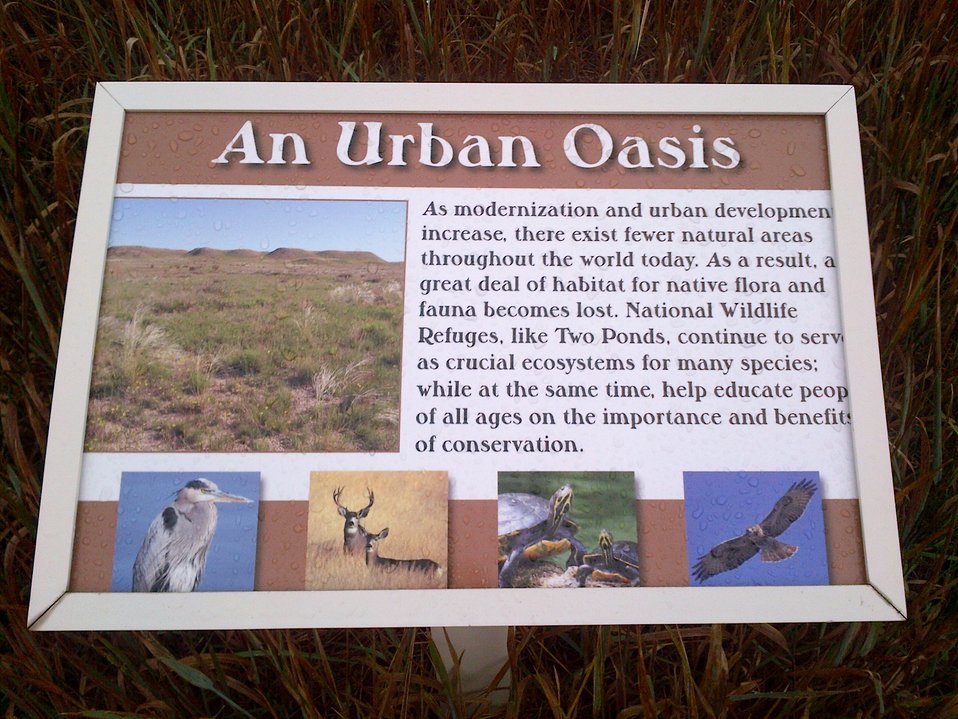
Sign - Urban Oasis